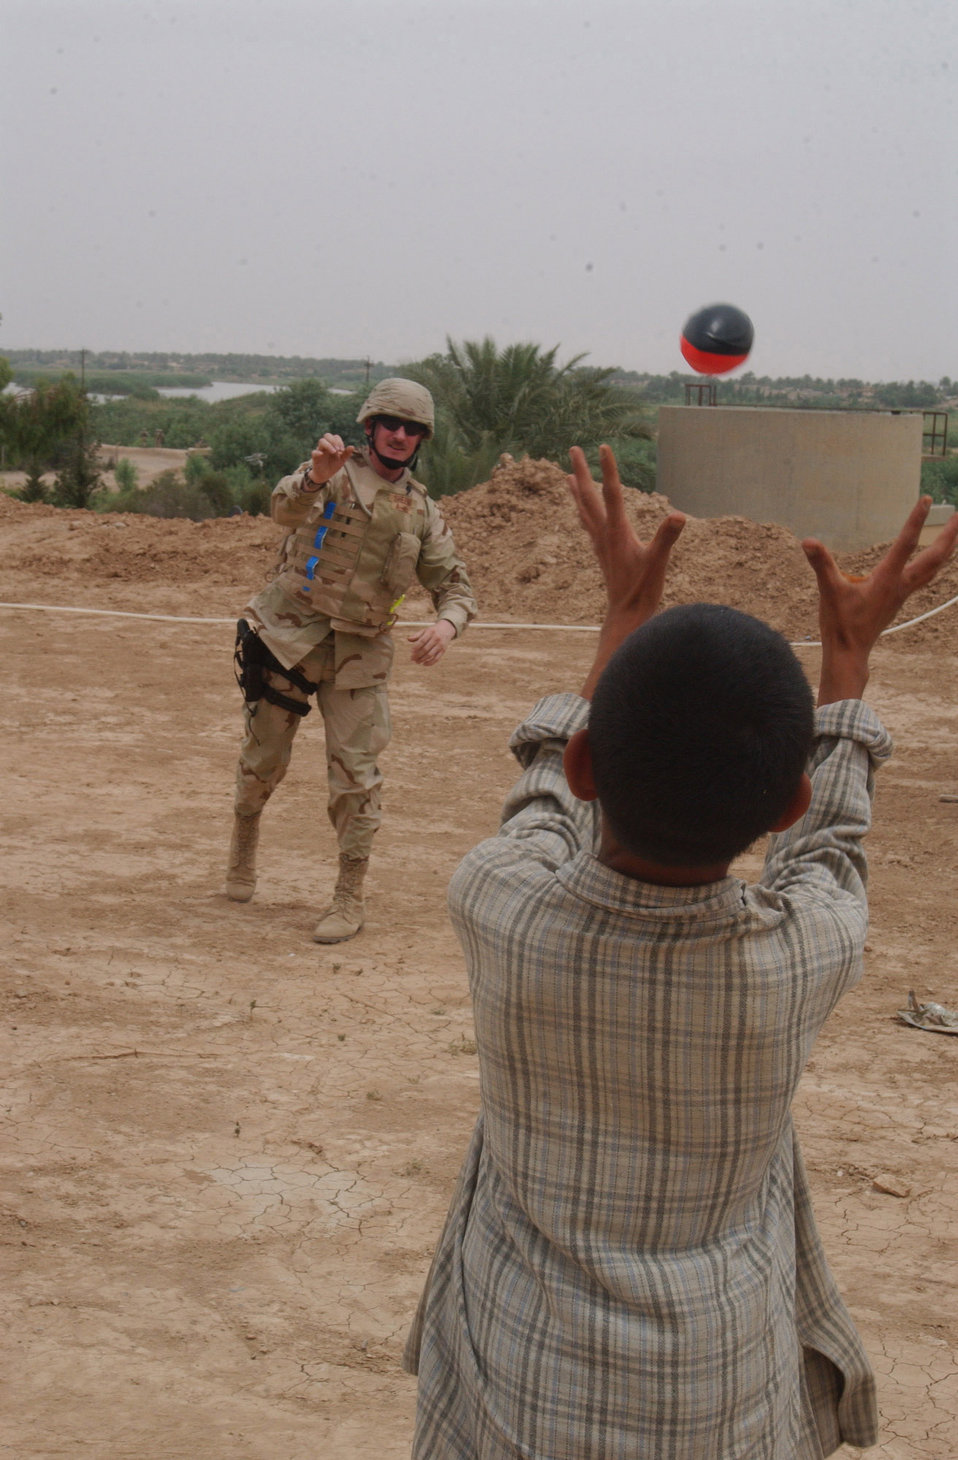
Chaplains do good works for Iraqi neighbors

IRAQ -- Staff Sgt. John Shepard plays catch with a boy during a recent humanitarian visit to a local village. He is a chaplain's assistant with the 332nd Air Expeditionary Wing at Balad Air Base.